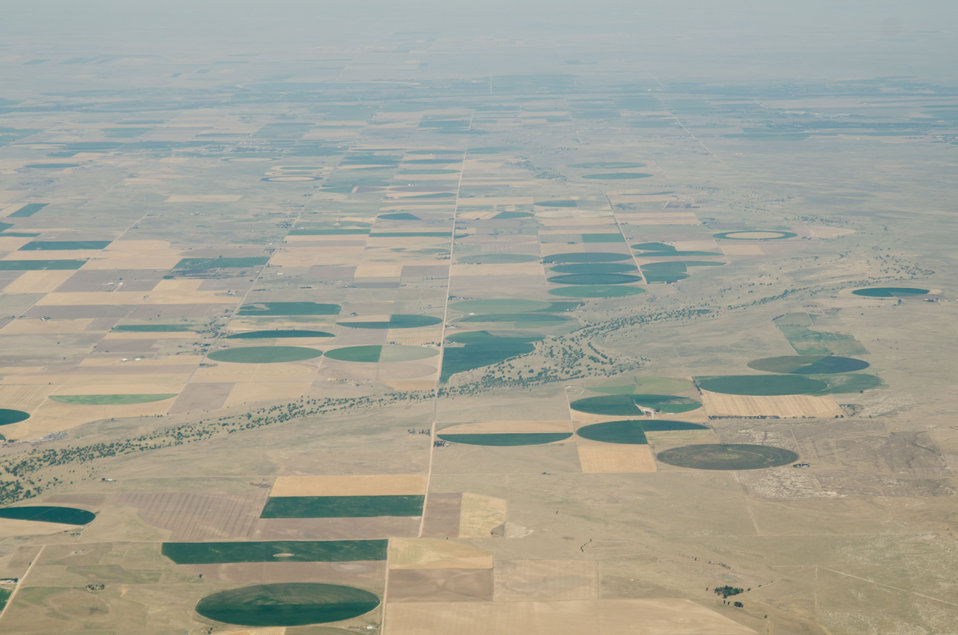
Aerial views of drought affected Colorado farm lands, near Wiggins, Colorado on Saturday, July 21, 2012. Green areas are irrigated, the yellow areas are dryland wheat crops.